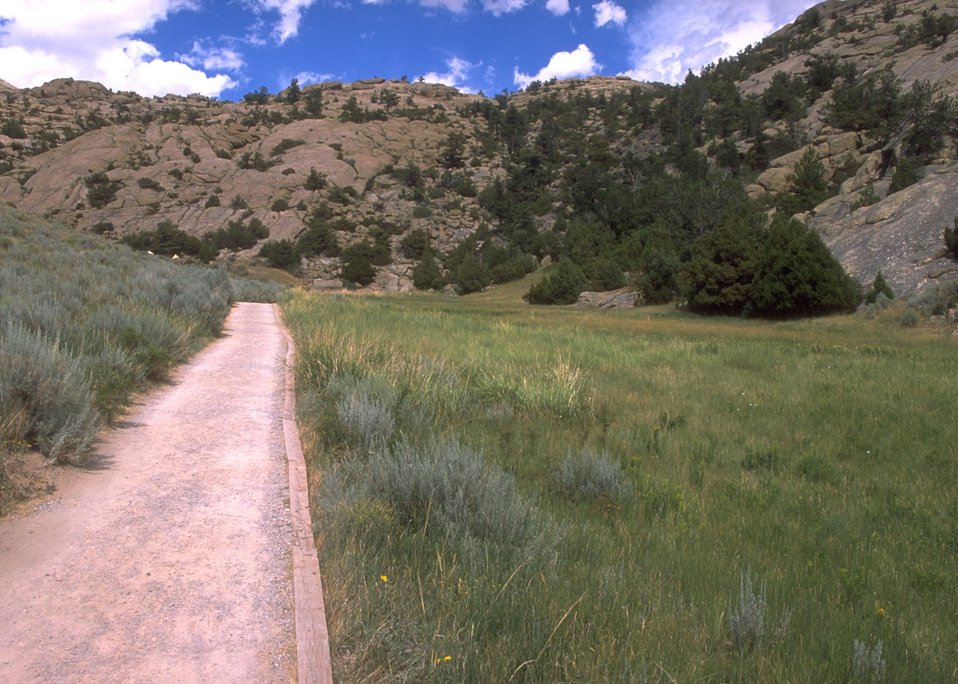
Martin's Cove area, Rawlins Field Office